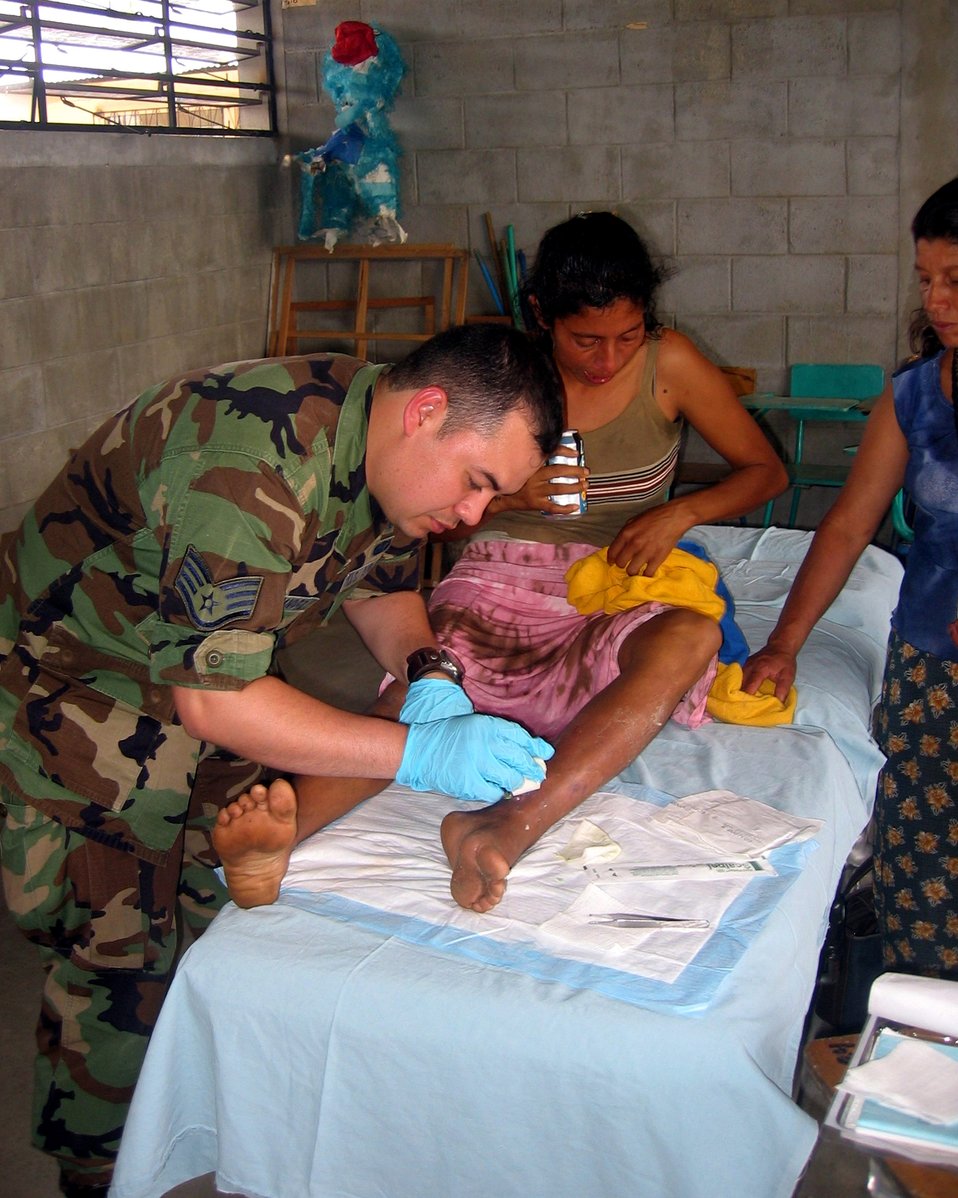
Air Force medics provide medical relief in Guatemala

Staff Sgt. Oscar Hernandez, a public health technician, disinfects a woman's leg during a humanitarian mission in some of the poorest regions of Guatemala. In April, Sergeant Hernandez from Vandenberg Air Force Base, Calif., and another 12 Airmen from various Air Force Space Command bases, saw more than 8,000 patients in 10 days.